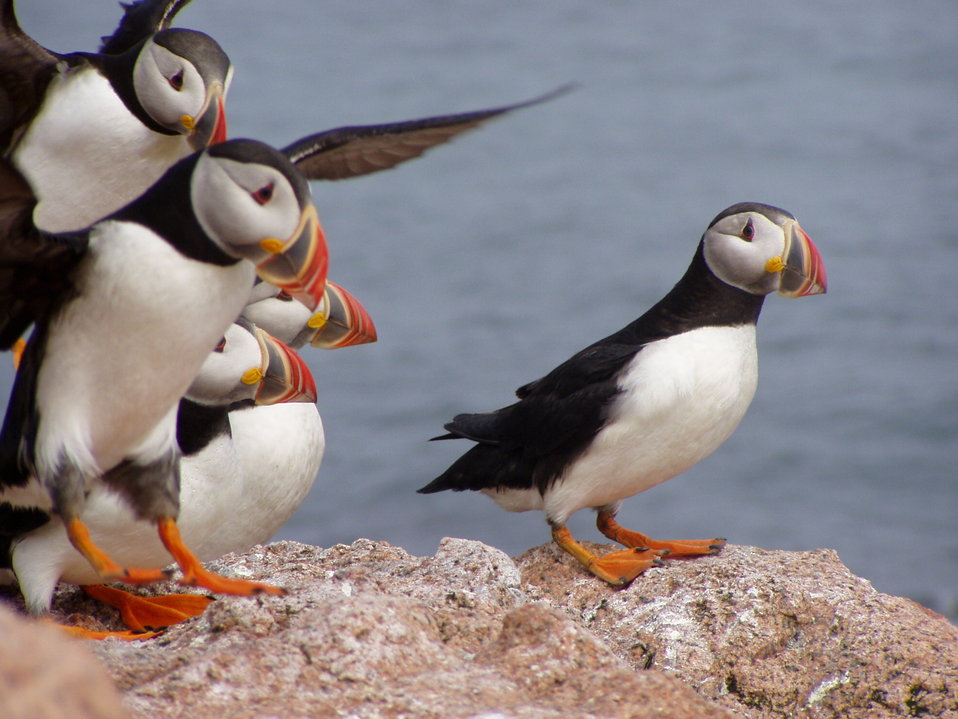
Photo of the week - Atlantic puffins landing

Photo of the Week - 12/15/09

A group of puffins at Maine Coastal Islands National Wildlife Refuge.